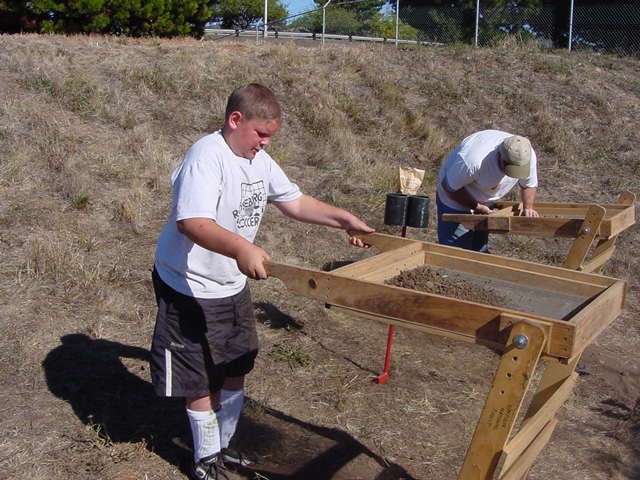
Eric and Jerry Fullerton screening for artifacts.